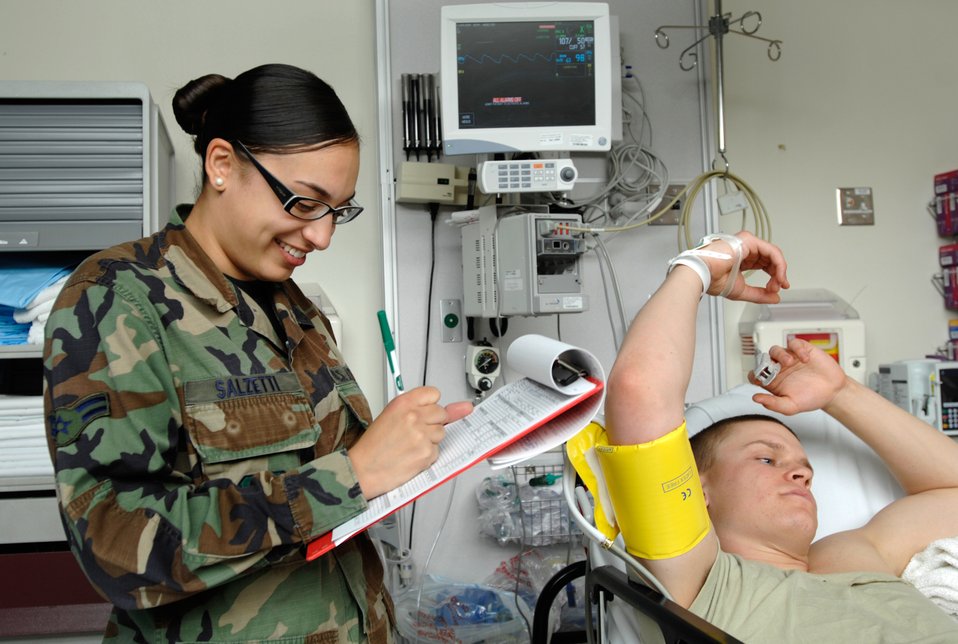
Emergency department

Airman 1st Class Jessica Salzetti, a medical technician in the 59th Emergency Medical Squadron, tracks a patient's vitals April 16 in the emergency department of Wilford Hall Medical Center at Lackland Air Force Base, Texas. Emergency department staff members see more than 52,000 patients a year, treating about 140 people each day.